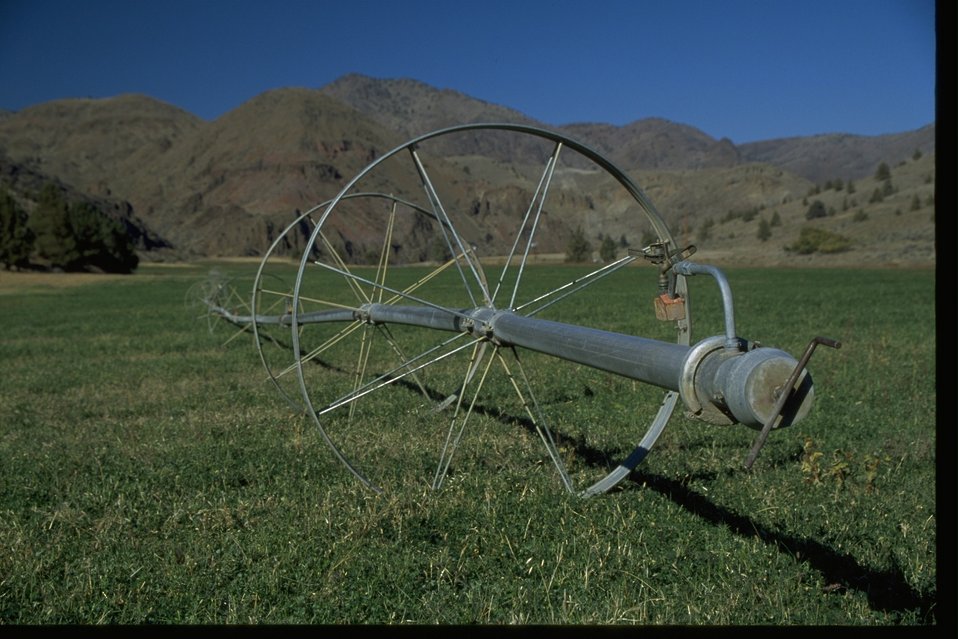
Sprinkler irrigation system in private agricultural land along the John Day River.